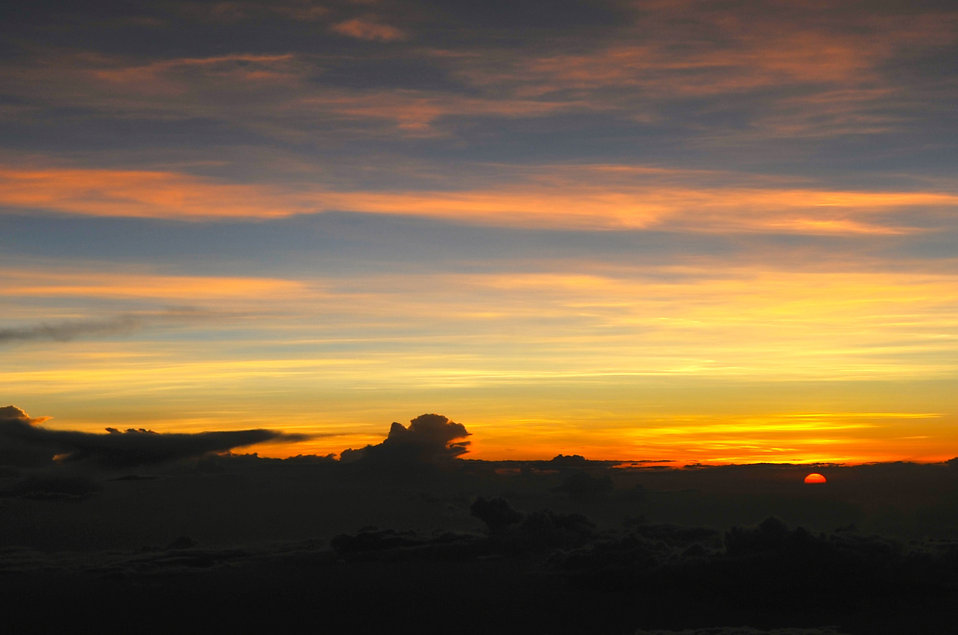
Sun Descends Into African Landscape As Secretary Kerry's Aircraft Approaches Ethiopia

The sun descends into the African horizon as the airplane carrying U.S. Secretary of State John Kerry approaches Addis Ababa, Ethiopia, on April 30, 2014, at the outset of a six-day trip across the Continent.